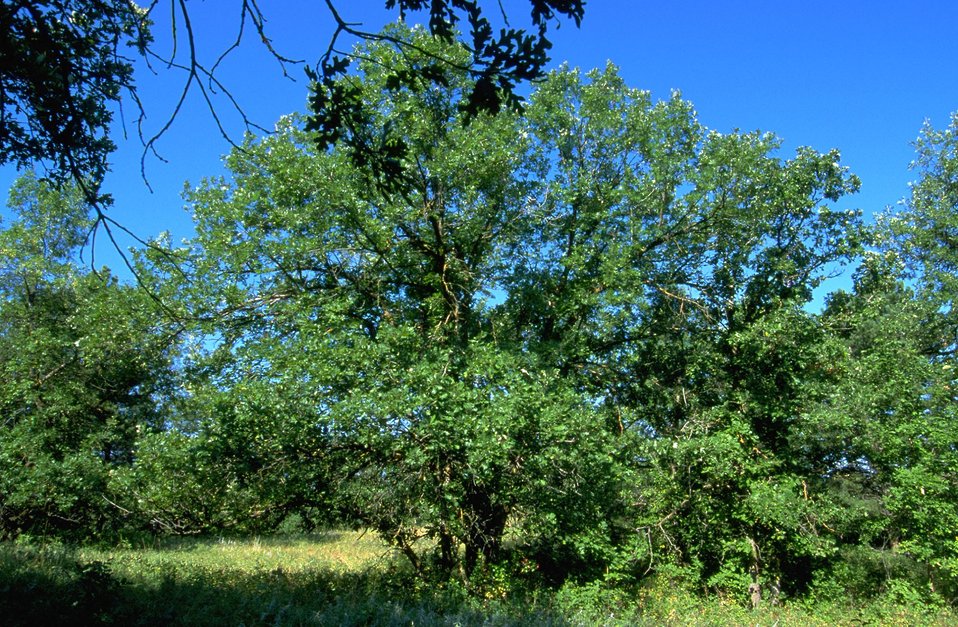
Oak Tree on Fort Meade